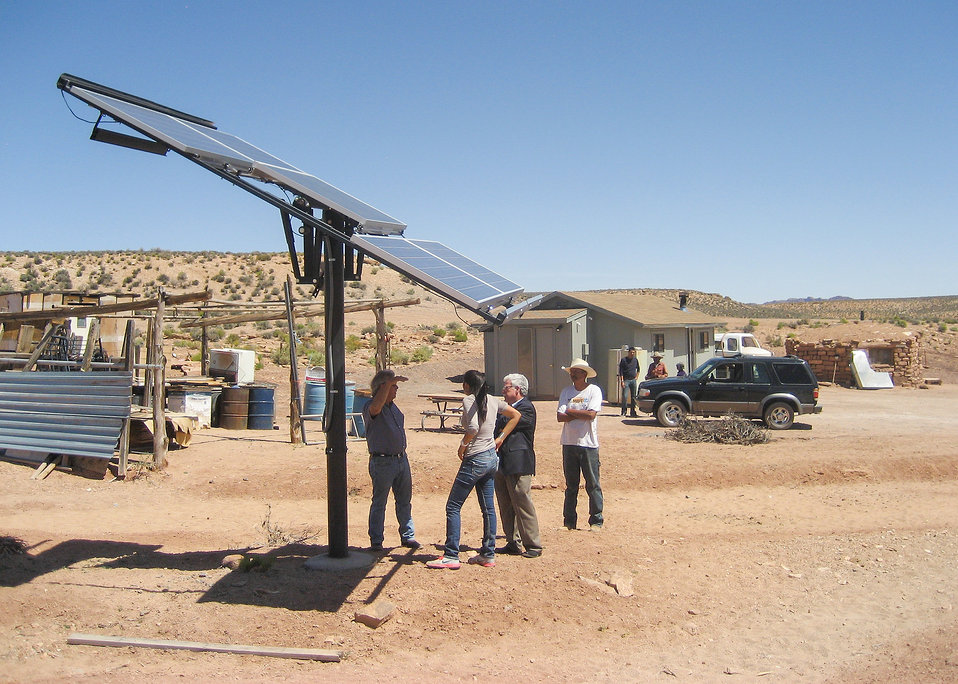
U.S. Department of Agriculture (USDA) Rural Development State Director Alan Stephens (third from left), Area Director Freddie Hatathlie, Grand Canyon Trust Director Roger Clark join family and friends at the Betty and Kee Acothley home in the former Bennett Freeze area of Arizona and take a look at their new solar electrical system and the repairs made to their home.